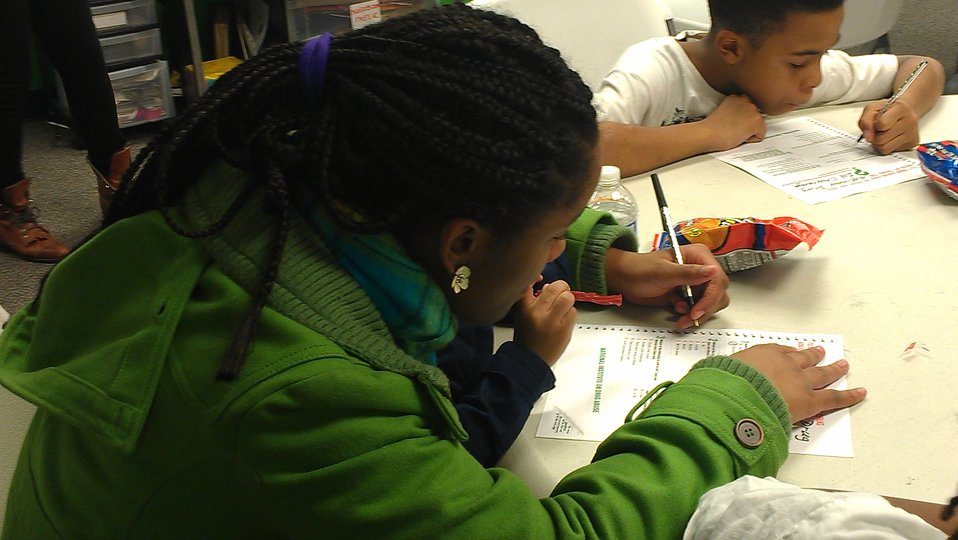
Washington, D.C. Youth, NDFW 2013

Sasha Bruce Youthwork, Inc. sponsor 2013 NDFW events for youth in Prevention Centers in Wards 5 & 6, Washington, D.C.